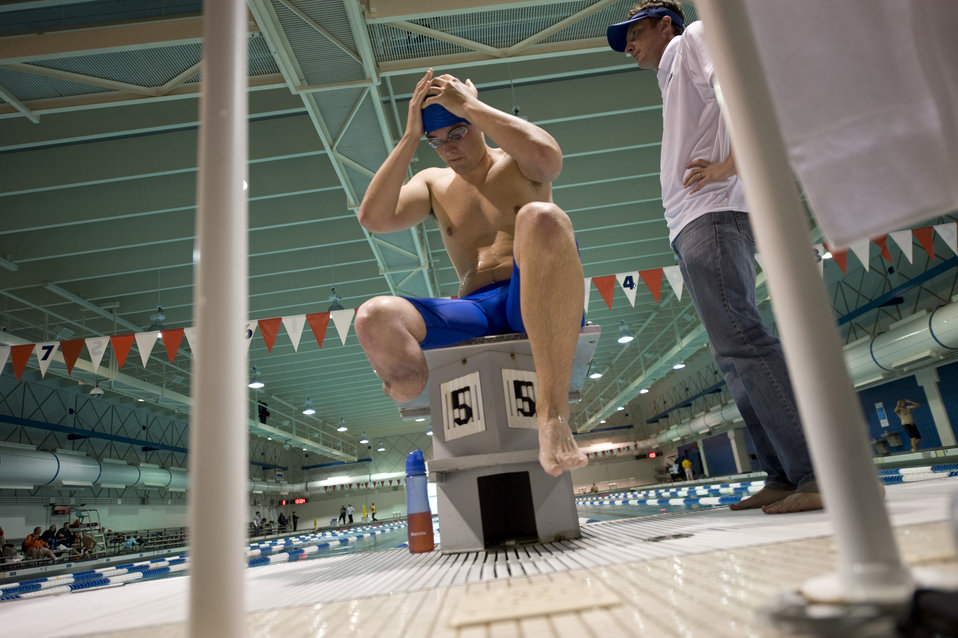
Warrior Games Airmen prepare for competition

Second Lt. Ryan McGuire prepares to dive off the starting block during swim practice May 11, 2010, at the Olympic Training Center in Colorado Springs, Colo. Lieutenant McGuire is a below-the-knee-amputee competing in the inaugural Warrior Games through May 14, 2010.